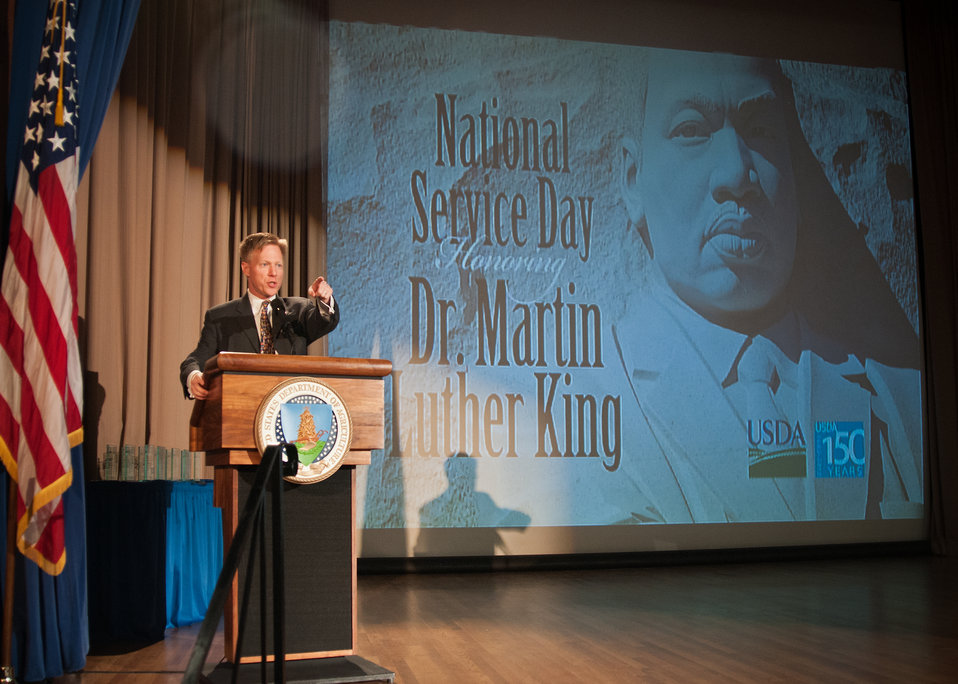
Max Finberg, Director, Faith Based and Neighborhood Partnerships, Master of Ceremonies reads a children’s book of Dr. Martin Luther King’s life to the audience during the National Service Day and Martin Luther King Celebration in honor of Dr. Martin Luther King Jr.’s contributions to the Civil Rights Movement at the United States Department of Agriculture in Washington, D.C., Thursday, January 12, 2012.